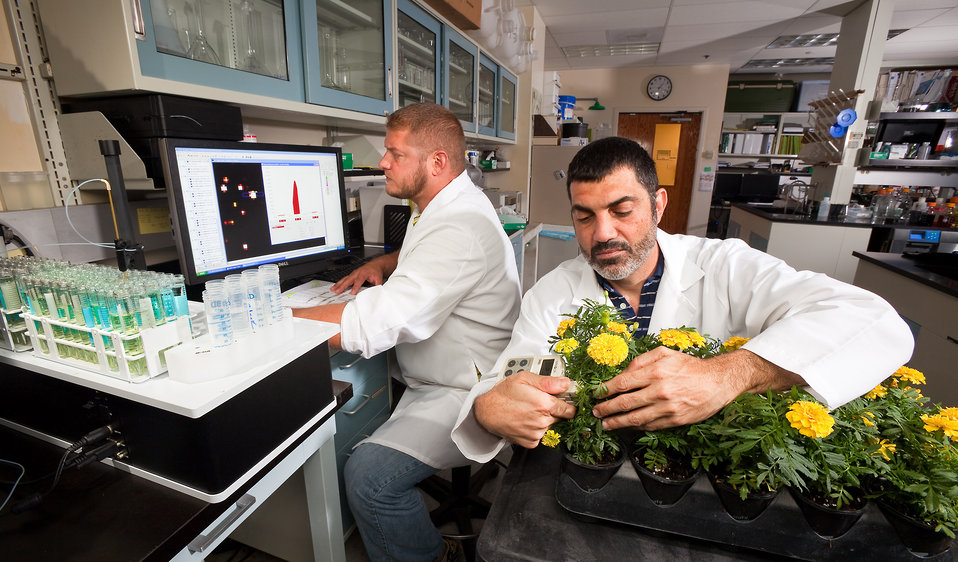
U.S. Department of Agriculture (USDA) Agricultural Research Service (ARS) technician Chris Lasser measures iron levels in iron chelate samples and horticulturist Joseph Albano measures chlorophyll levels in leaves of marigolds treated with the chelating agent EDDS on May 21, 2012.